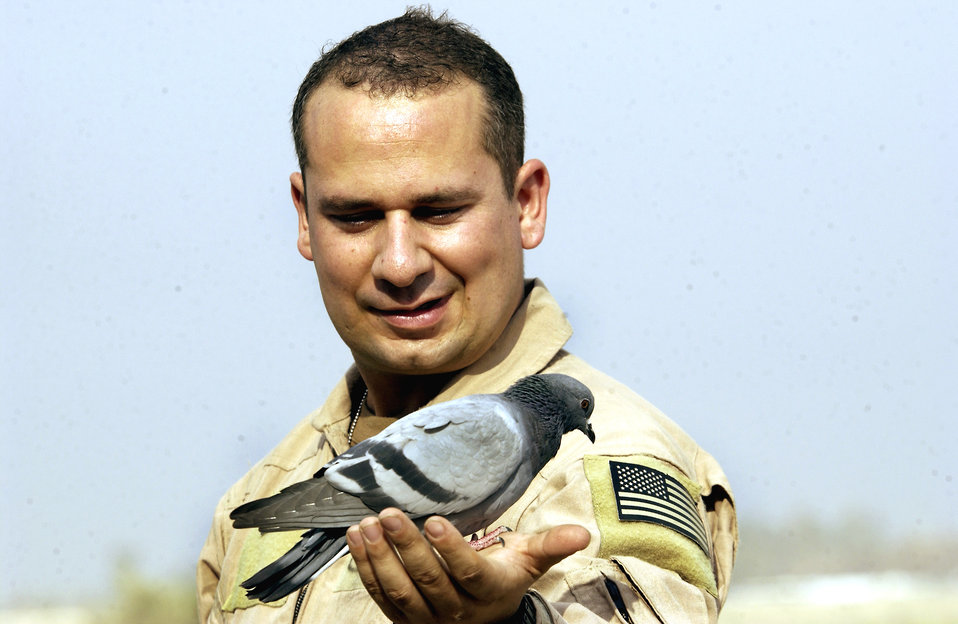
For the birds

BAGHDAD INTERNATIONAL AIRPORT, Iraq -- Staff Sgt. Steve Sirois, an HH-60 Pave Hawk flight engineer, holds Bird, a pigeon his unit has been caring for since they deployed here. Bird was rescued and nursed back to health by airmen of the 301st Expeditionary Rescue Squadron. Sirois and other 101st ERQS airmen began caring for and feeding Bird when they replaced the 301st.